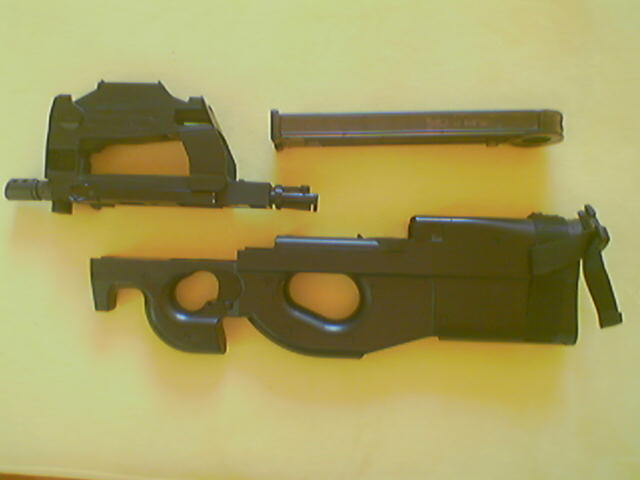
Čeština: Rozebrana kopie P90 pro airsoft.